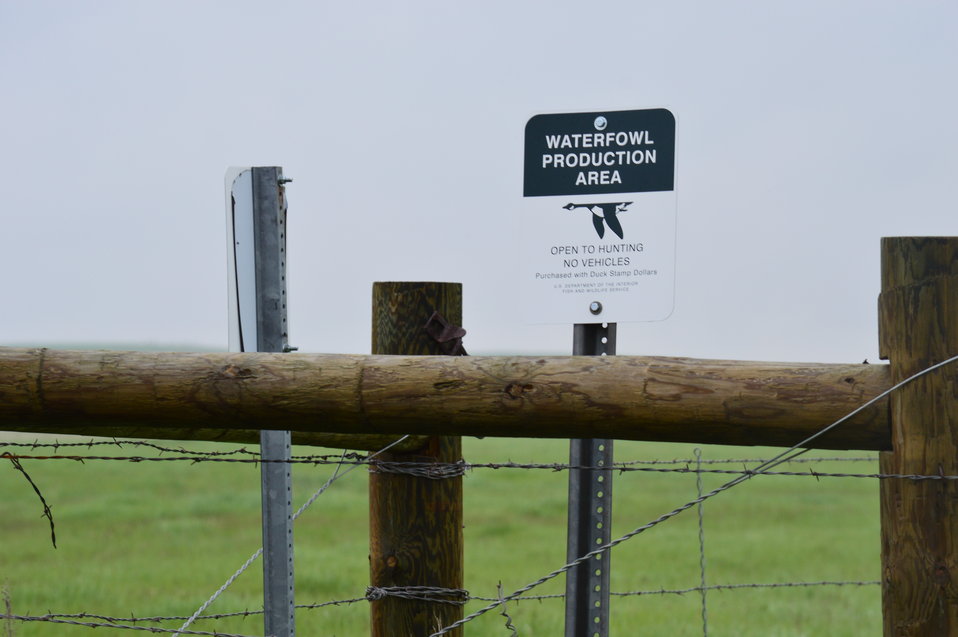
Close-up of Waterfowl Production Area sign

Scenery and wildlife at Lost Lake National Wildlife Refuge in North Dakota.